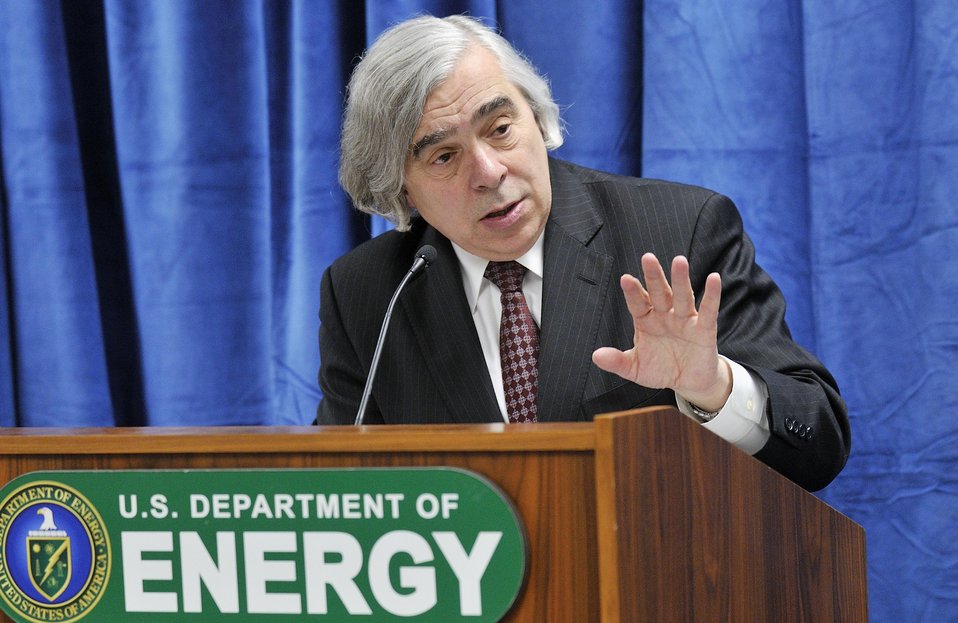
168

SECRETARY E. MONIZ - 2014 DOE BUDGET ROLL OUT ON MARCH 4, 2014